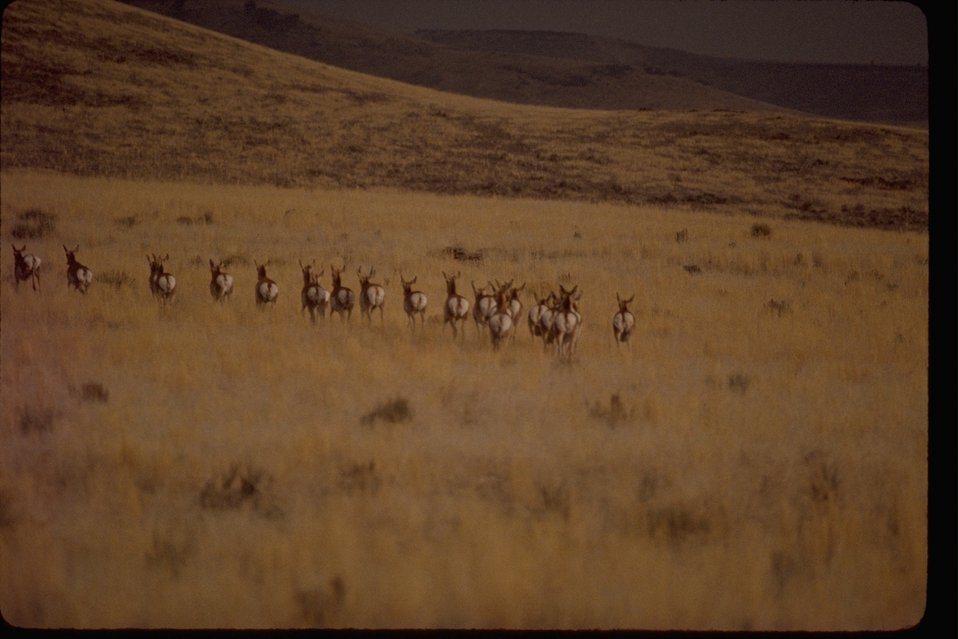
Prong Horn antelope near Princeton, Oregon, East of Burns in Harney County.